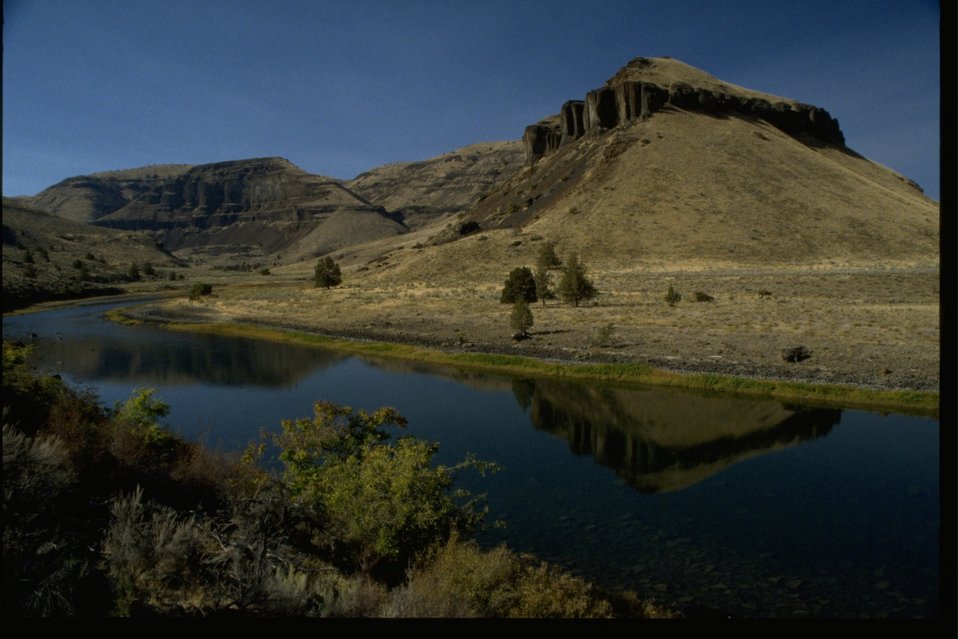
Virgin Riparian area along John Day River with cliffs across river.